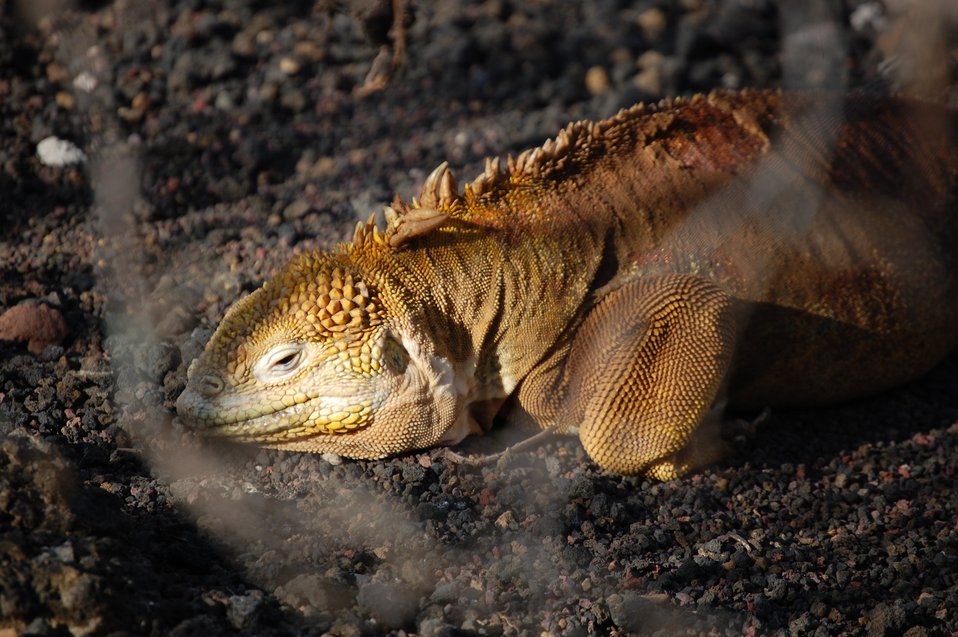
Land iguana.